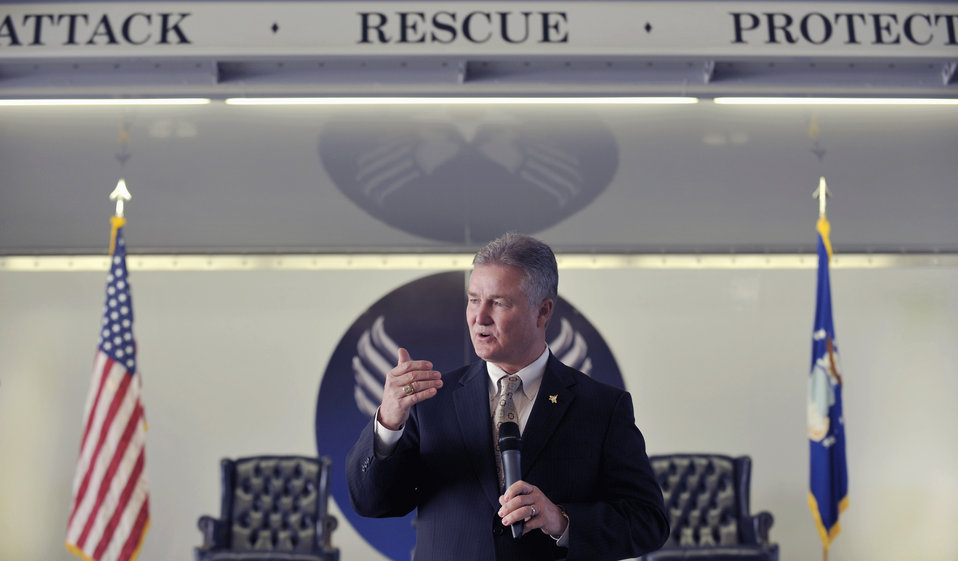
14th CMSAF mentors Moody Airmen

Retired Chief Master Sgt. of the Air Force Gerald Murray speaks to Airmen during a chief's call Dec. 2, 2010, at Moody Air Force Base, Ga. Chief Murray was invited to speak to the base concerning key issues in the Air Force and at Moody AFB.